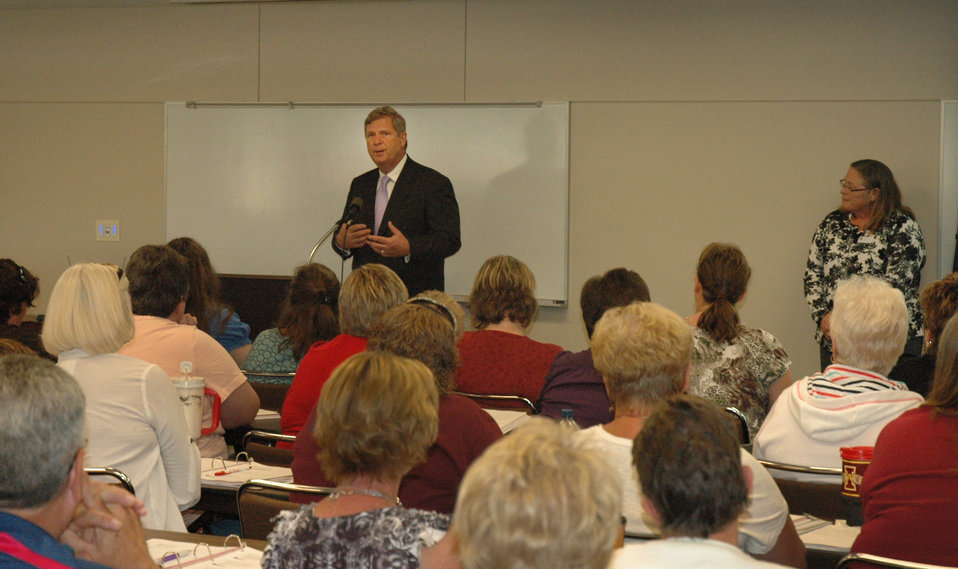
Agriculture Secretary Tom Vilsack made a surprise visit to the School Foods – Healthy Meals Workshop in Ames, Iowa, on Tuesday, July 24, 2012, where more than 100 school food mangers were meeting to discuss Iowa’s school lunch programs. The Secretary told conference attendees that President Obama’s first directive to him when becoming Ag Secretary was to make sure our nation’s children receive proper nutrition through school lunches.